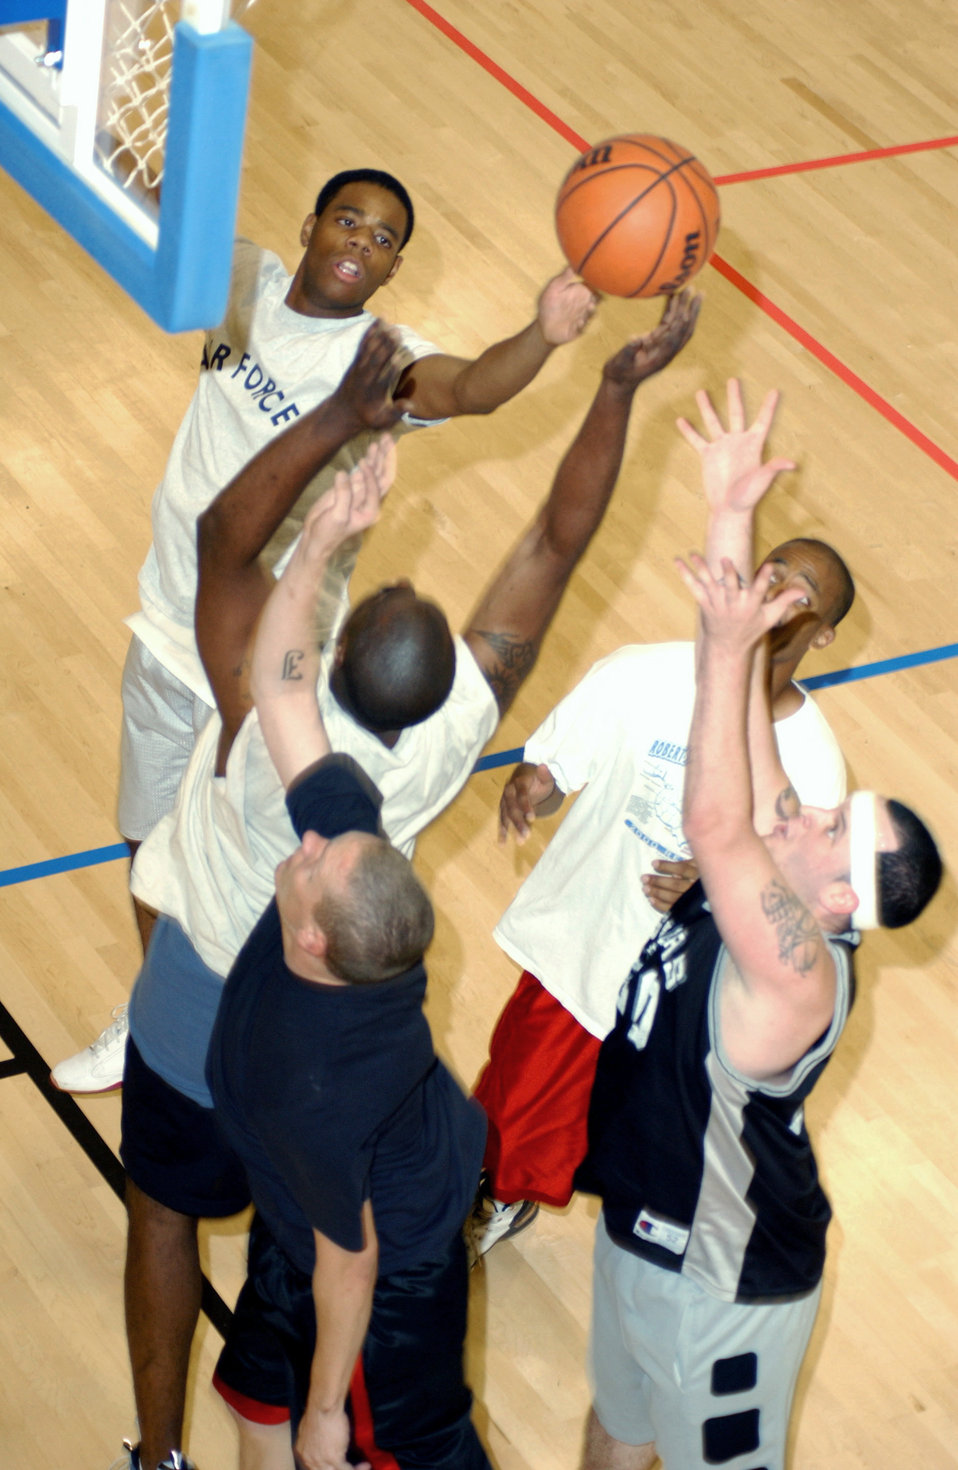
Hoopin'

ROYAL AIR FORCE MILDENHALL, England -- Members from the 100th Services Squadron and 100th Comptroller Squadron compete during sports day for the grand opening of Hardstand Fitness and Wellness Center here recently. A total of 16 squadrons tested the new full-sized basketball court featuring six electronic power goals, two volleyball courts and electric bleachers.